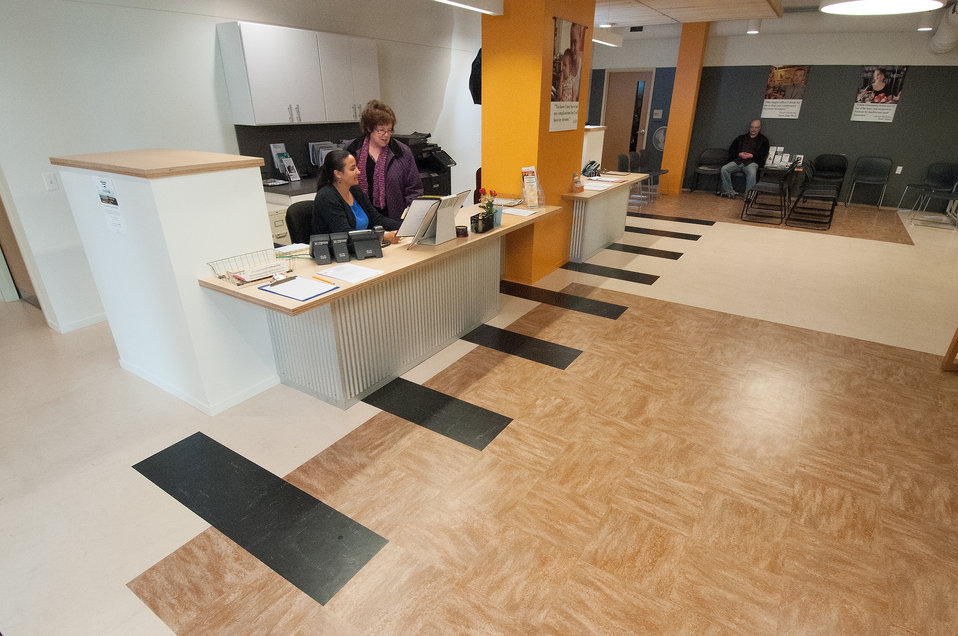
Yvonne Lory (left), Central Vermont Community Action Council shows Karen Lynch (right), U.S. Department of Agriculture (USDA) Rural Development(RD) Loan Specialist the new lobby of the CVCAC. The mission of the Central Vermont Community Action Council is to create economic security for low to moderate-income residents in rural Central Vermont. Through the assistance of a USDA Rural Development (RD) Community Facilities (CF) Grant the CVCAC was able to consolidate their services in downtown Barre on Sep 17, 2013, Vermont.